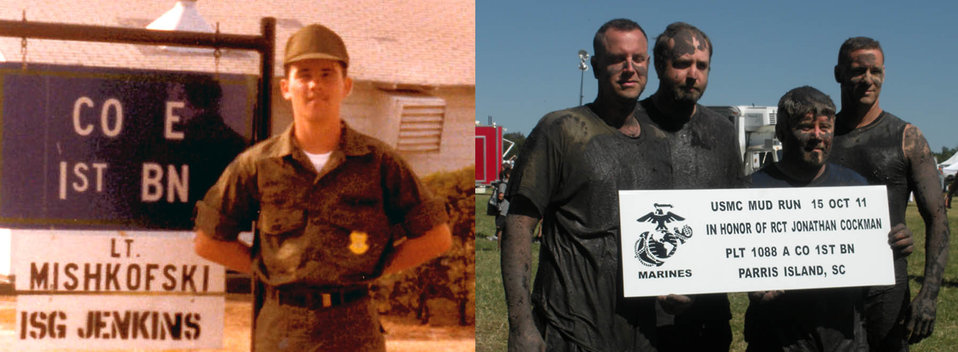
Don Cockman (Left) Don at Ft. Jackson (age 17) (Right photo) Don Cockman (second from right), and McLain (far right) after USMC Mud Run in honor of Cockman's son, Jonathan, an active duty Marine now stationed at 29 Palms, CA..
Don Cockman joined the North Carolina Army National Guard in January 1980. After completing basic training at Fort Jackson, SC, in August 1980, he enrolled in the Reserve Officers’ Training Corps (ROTC) at North Carolina State University. Cockman completed the ROTC Advanced Course at Fort Bragg, NC in July 1981, and served as the Cadet Battalion Commander at NCSU until he was commissioned as a Signal Corps Second Lieutenant in May 1982. Cockman continued to serve in the Guard as a Platoon Leader with Detachment 1, C Co, 230th Signal Bn and completed the Signal Officers’ Basic Course at Fort Gordon, GA in June 1985. Cockman ended his military service in August 1988 as a Captain after serving three years as Company Commander for C Co, 230th Signal Bn. His military awards and decorations include ROTC Distinguished Military Graduate, Signal Officers’ Basic Course Distinguished Military Gradute, Army Service Ribbon, and the National Guard Achievement Medal..
After serving 19 years as a Dept of Defense (DOD) civilian with the Fish and Wildlife Branch at Fort Bragg, NC, he assumed his current duties as the Deputy Project Leader at Carolina Sandhills National Wildlife Refuge in McBee, SC in May 2003. As a DOD employee, Cockman earned a federal law enforcement commission in July 1994 and continues to serve as a dual function wildlife officer and firearms instructor with the Fish and Wildlife Service.